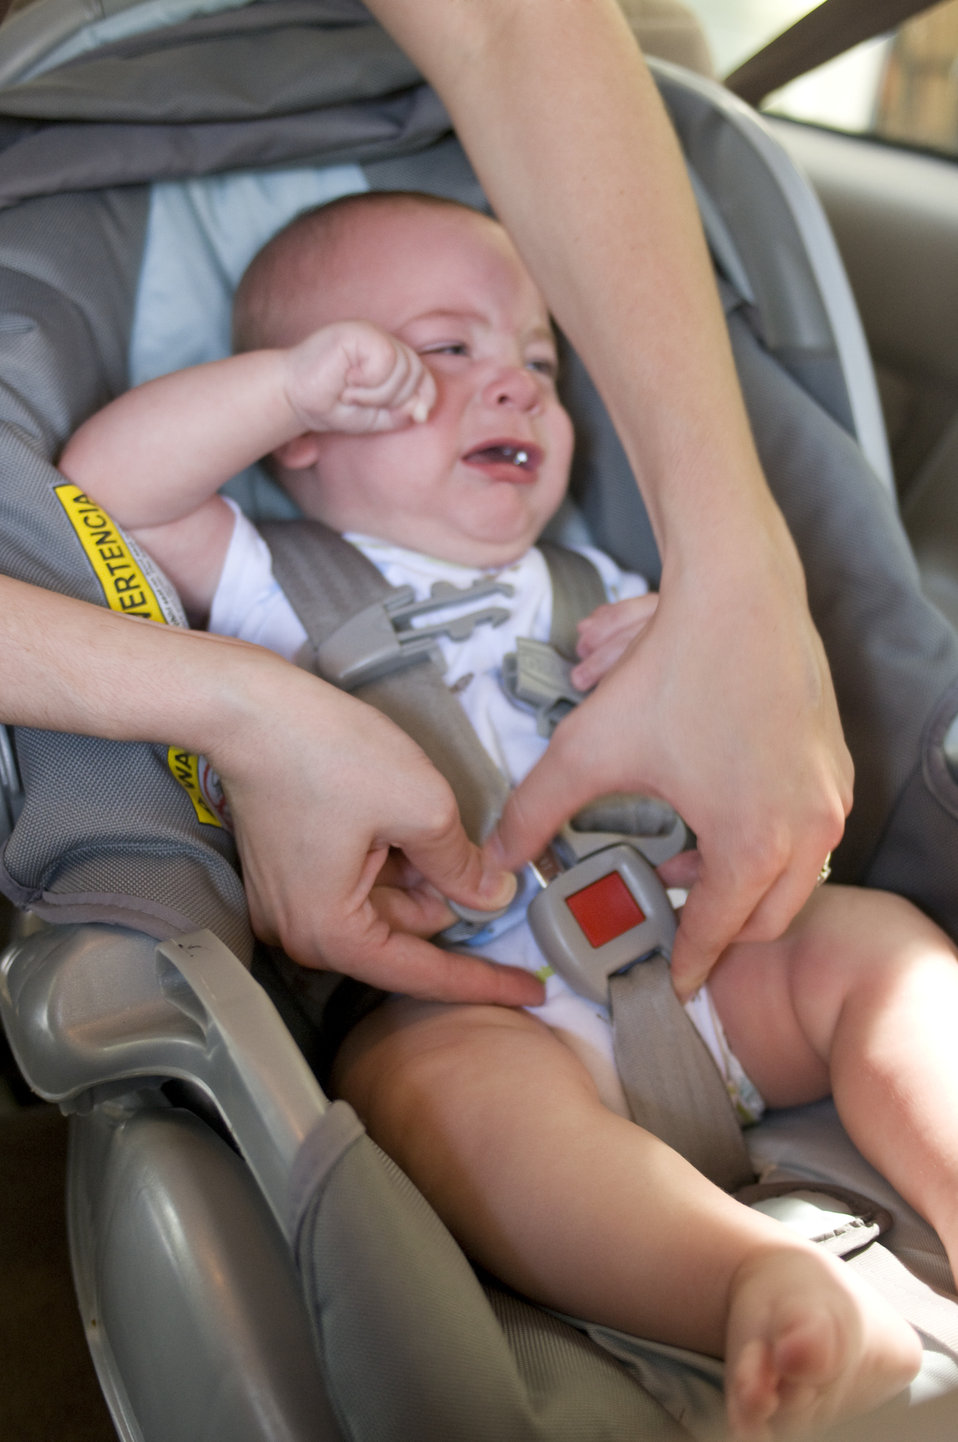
This image depicts a mother in the process of securing her infant child into a back seat-located child safety seat. At this point of the process, even though her baby was not too happy about the sitting in her car seat, she was adjusting her child's fit in the seat, ensuring both the baby's safety and comfort.